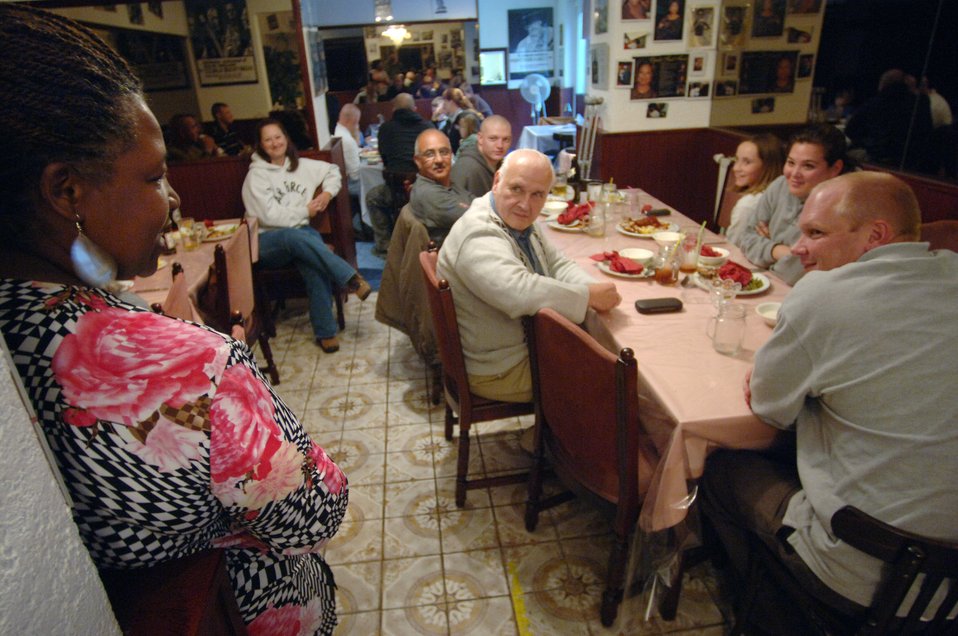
Volunteer organization lifts spirits of wounded veterans

Mama West's restaurant owner Brenda West speaks with wounded service members from Landstuhl Regional Medical Center who, as a house rule, eat for free. Nearly a half-dozen outpatients from LRMC were transported by